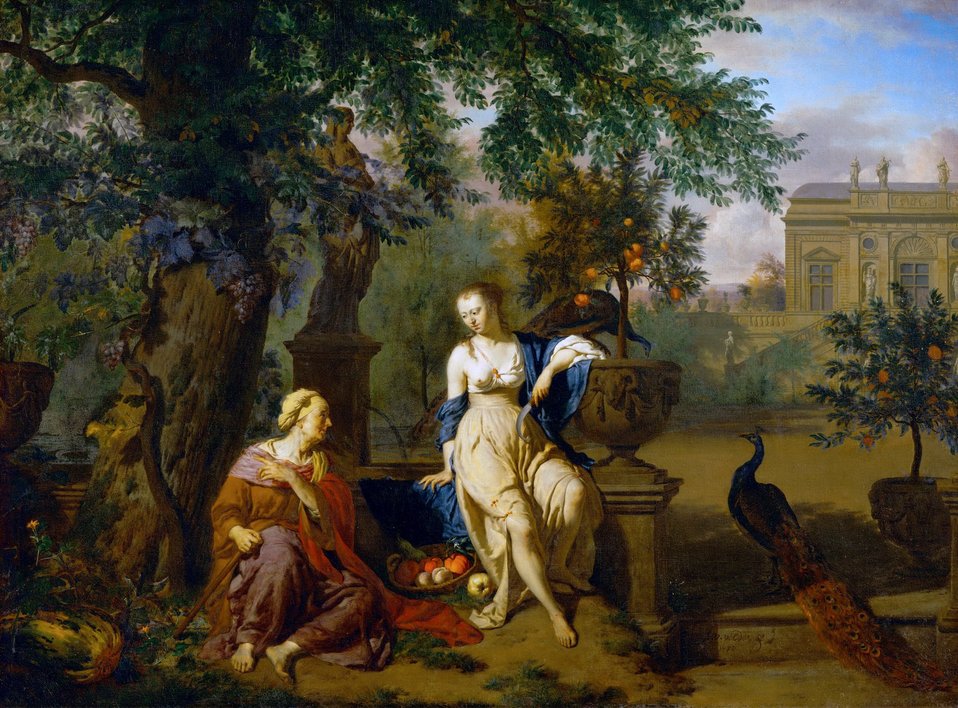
Adriaen van de Velde - Vertumnus and Pomona